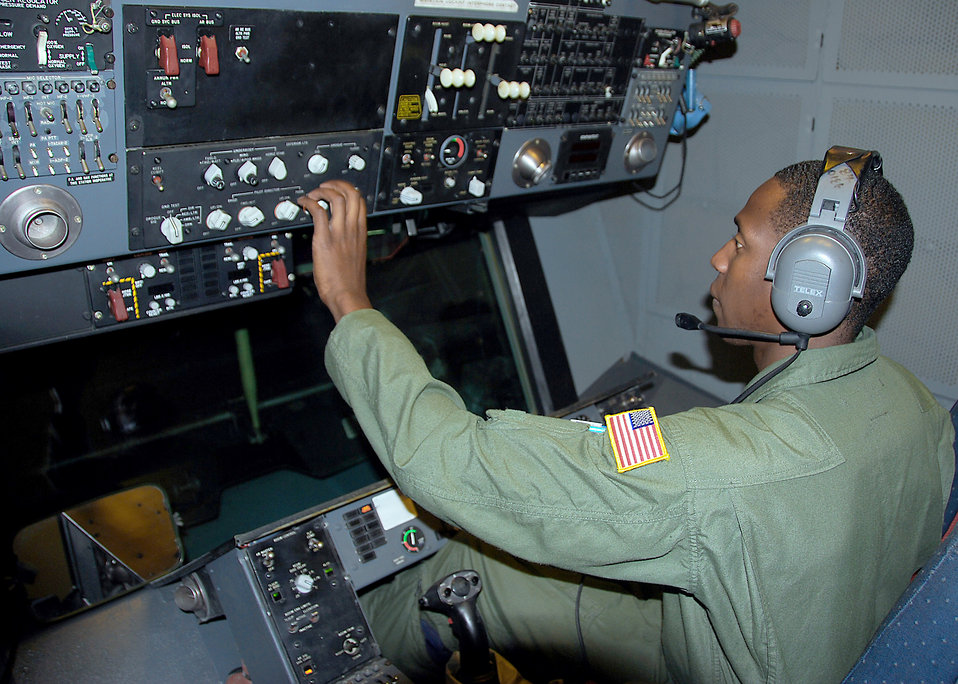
KC-10 crew performs humanitarion mission

Staff Sgt. Devon Jarvis runs a pre-flight test on a KC-10 Extender's aerial refueling systems prior to a return flight Sept. 3, 2010, to Joint Base McGuire-Dix-Lakehurst, N.J. Sergeant Jarvis and eight other crew members were on a humanitarian mission to help transport privately-donated winter clothing that will be distributed to villages and orphanages in and around Kabul, Afghanistan. Sergeant Jarvis is a 76th Air Refueling Squadron boom operator.